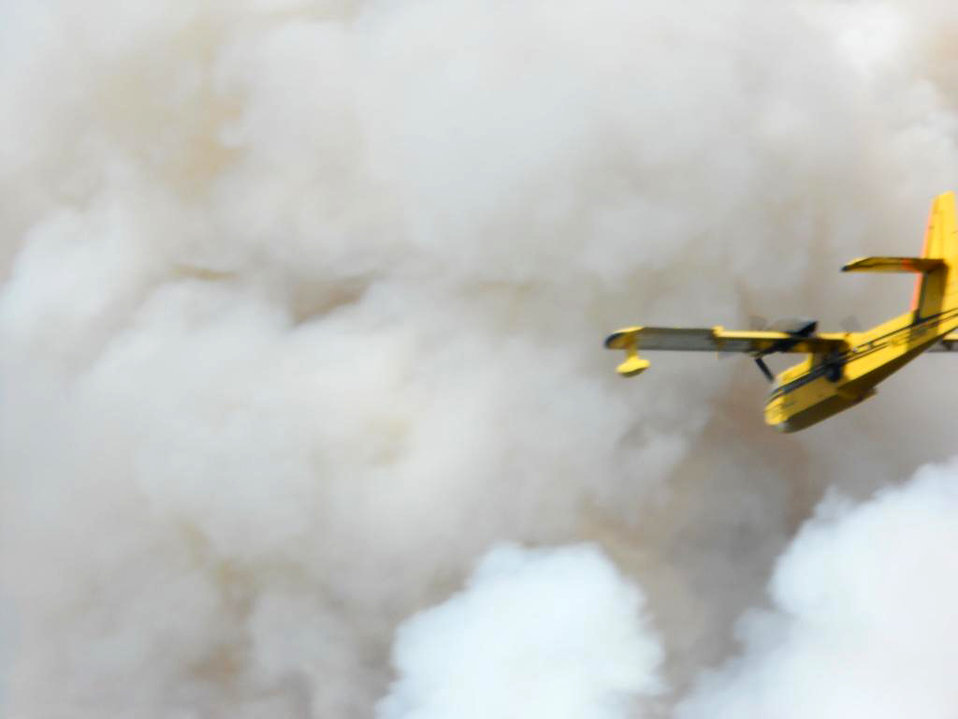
Aircraft prepares to make drop on Stewart Creek Fire. The Stewart Creek Fire located 25 miles east of North Pole, AK began on Jun. 19, 2013 due to human causes and has consumed an estimated 85, 475 acres. The fire is approximately 57% contained.